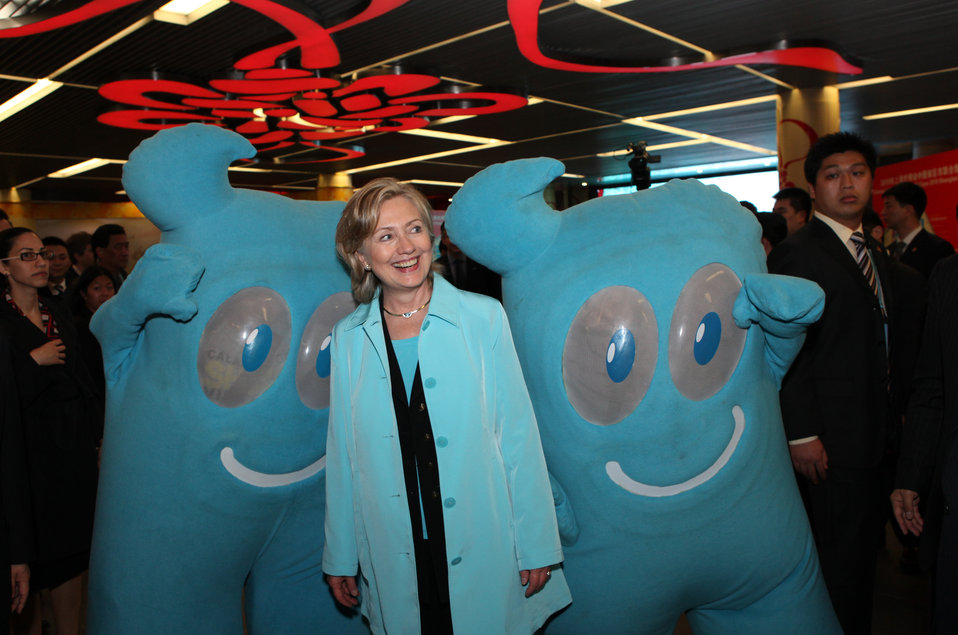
Secretary Clinton Poses With “Haibao”

U.S. Secretary of State Hillary Rodham Clinton poses with “Haibao,” the mascot of the 2010 Shanghai Expo, in Shanghai, China, May 22, 2010.